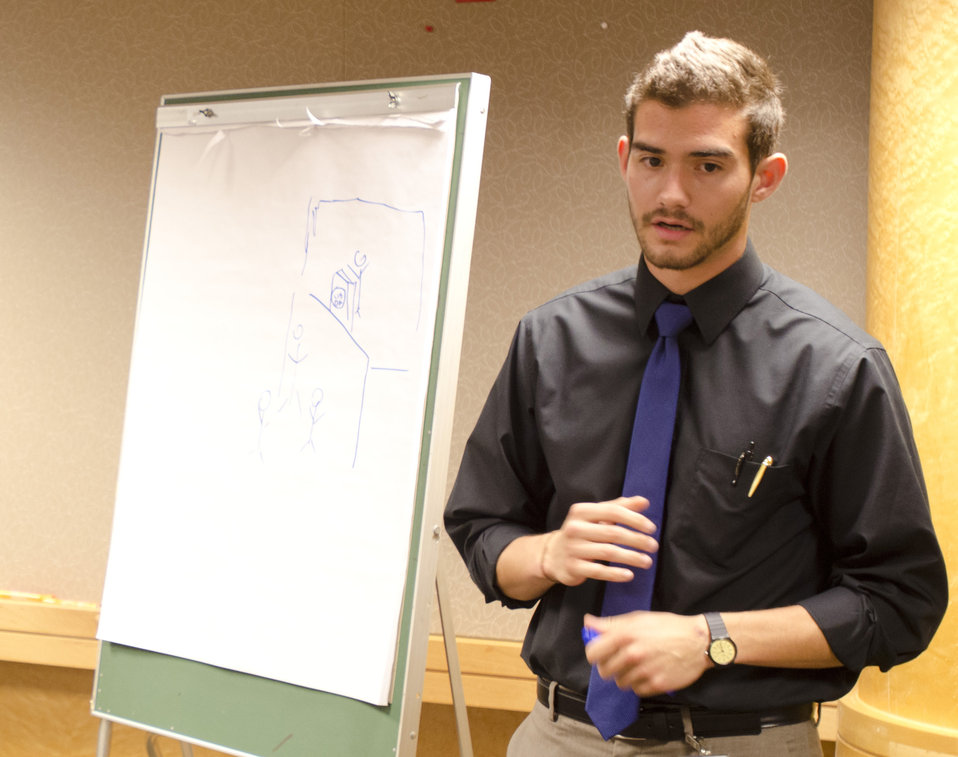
U.S. Department of Agriculture (USDA) Food Nutrition Service (FNS) intern Marco Castanos makes remarks during the group presentation at the USDA Internship Program Listening Session held in USDA’s South Building in Washington, D.C. on Monday, August 7, 2012. The purpose of the USDA Internship Program Listening Session is to provide interns with a forum to express their views about their experiences as a USDA intern. These young people will be among the most promising future USDA leaders and participate in an individual discussion and group session that will develop leadership skills.